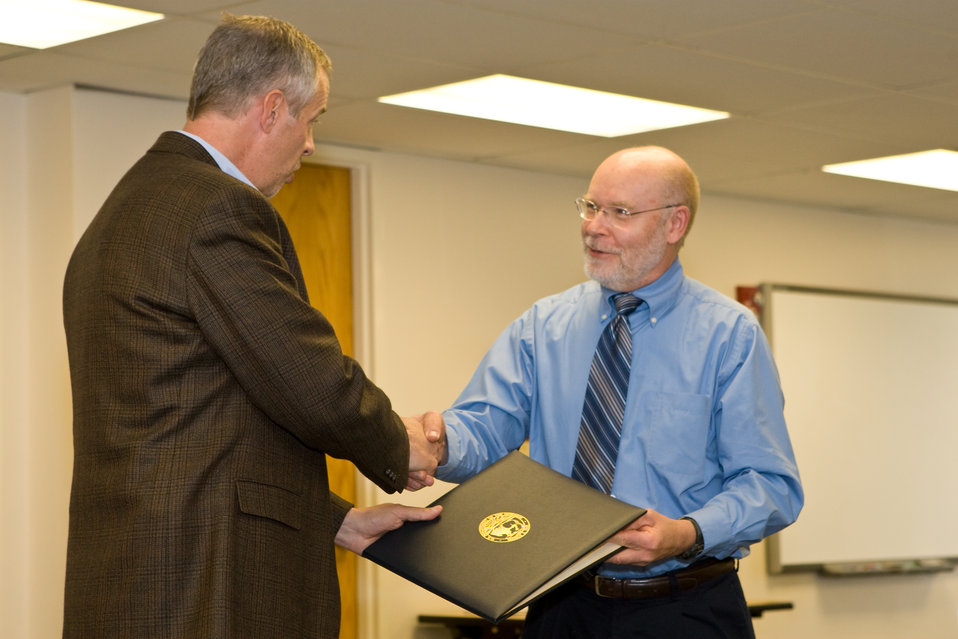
Mountain-Prairie Regional Director Stephen Guertin Presents Steve Fritts With a Department of the Interior Honor Award

On May 23rd, 2011 The U.S. Fish and Wildlife Service Mountain-Prairie Region honored three of the most influential individuals in wolf recovery in the Northern Rocky Mountains: Ed Bangs, Steve Fritts, and Margot Zallen. Ed Bangs started the event with an hour-long presentation, “Wolf Conservation: The Good, The Bad, and The Ugly.”

Following the presentation, Regional and National leadership recognized the imminent retirement of Ed, Steve, and Margot with a variety awards for their contributions.